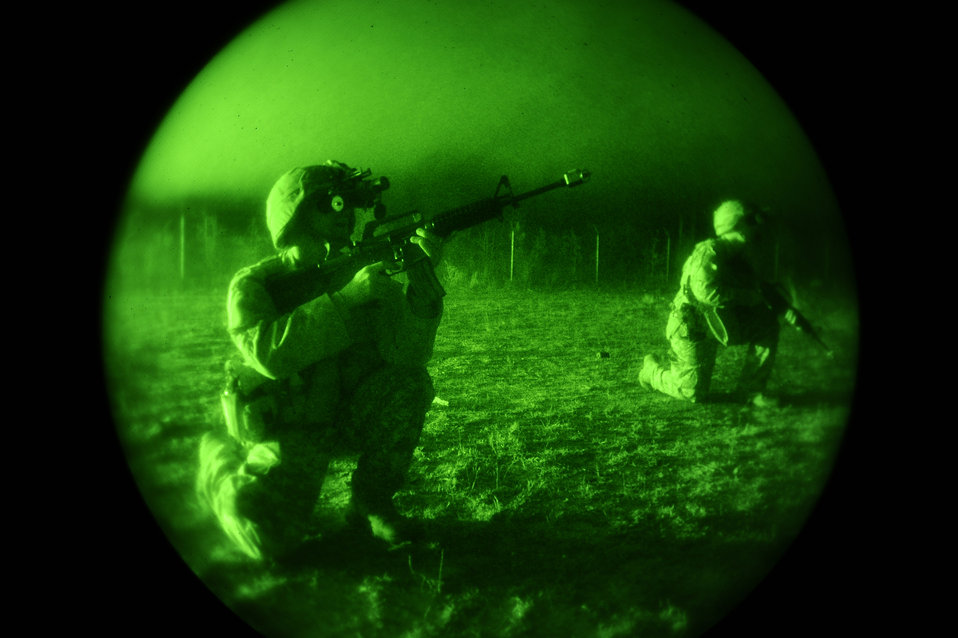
Last raid before graduation...

Tactical air control party students conduct a night raid on a building during their final field training exercise on an Eglin Air Force Base, Fla., range. They are with Det. 3, 342nd Training Squadron.